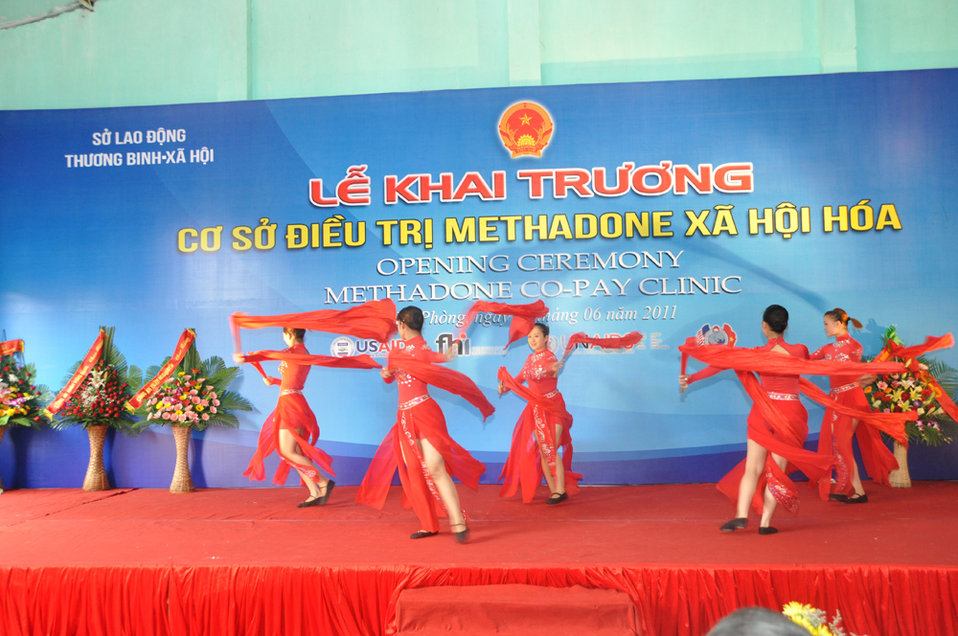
Co-pay Methadone Treatment Center Opens in Hai Phong on June 18, 2011